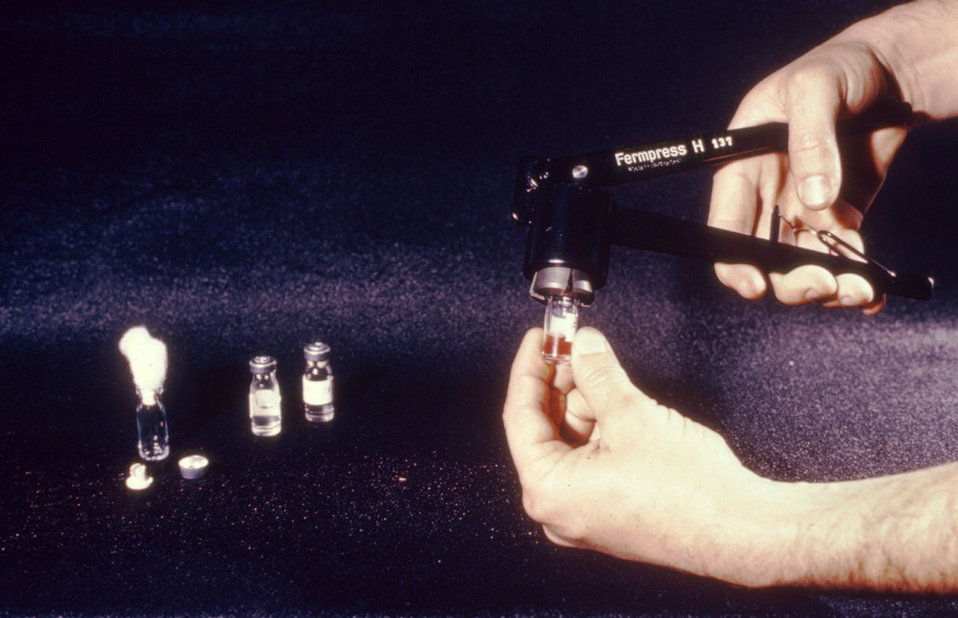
This individual is demonstrating the proper procedure of sealing vials using a Wheaton� crimper.